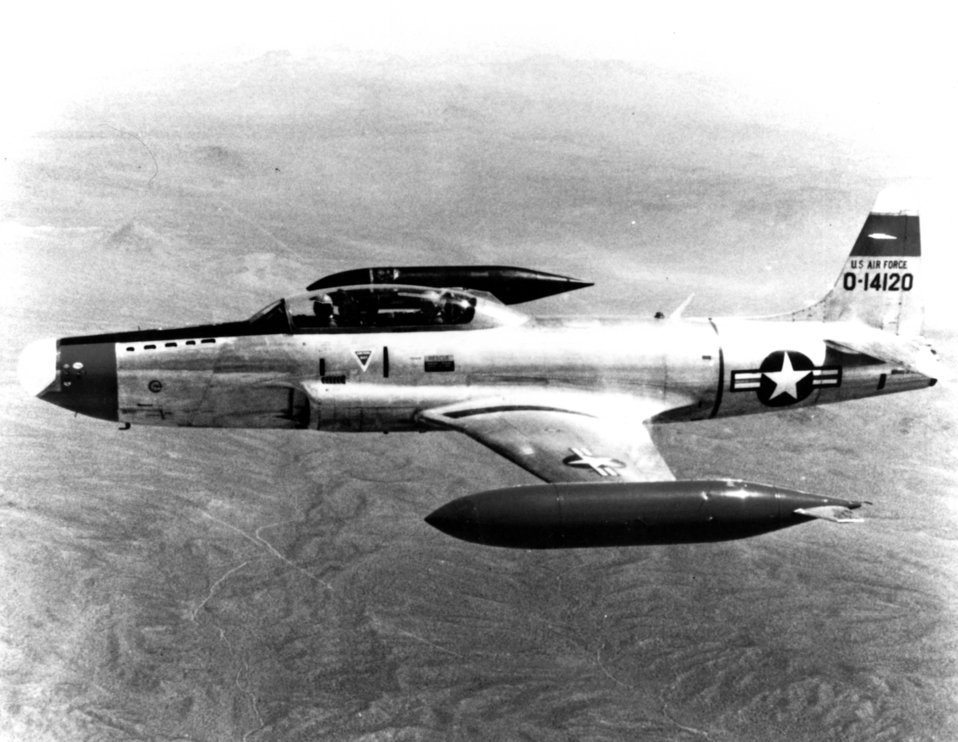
F-94 Starfire

1940's -- The F-94 series all-weather interceptors were developed from the Lockheed F-80 Shooting Star. The prototype F-94 first flew on July 1, 1949. The Starfire was subsequently produced in the -A, -B, and -C series.